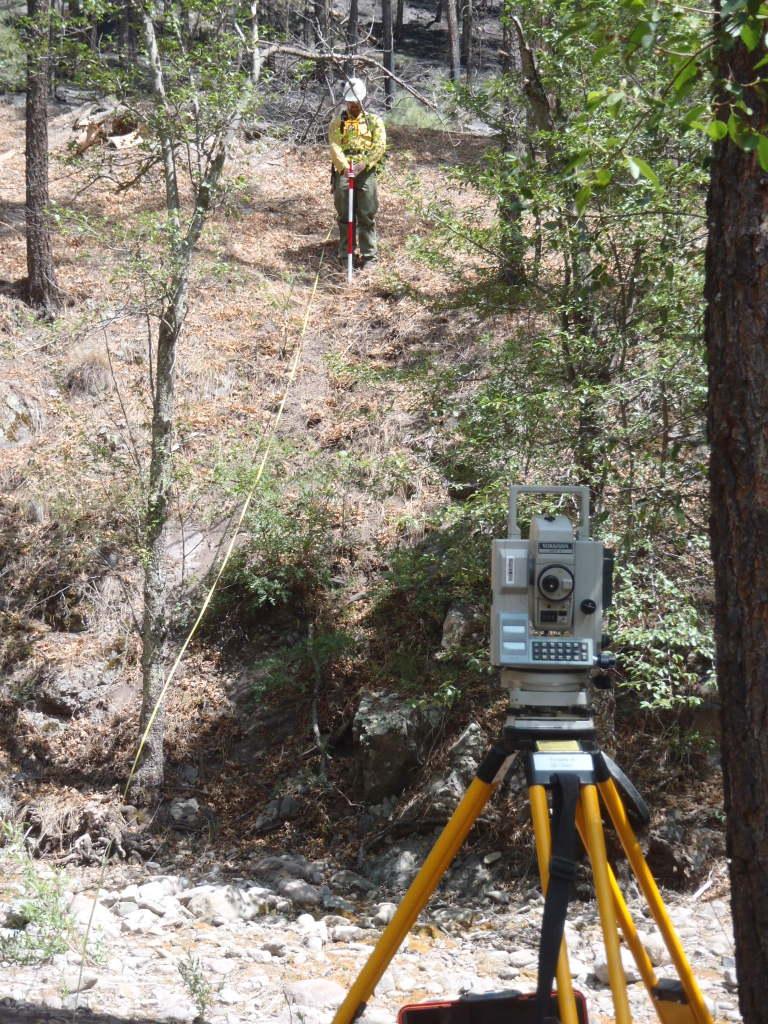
Burned Area Emergency Response (BAER) team hydrologist measures a cross section of Gallinas Creek in Gila National Forest near Kingston, NM. The Silver Post Fire response has the Burned Area Emergency Response (BAER) team beginning operations to seed acres of high burn severity and to mulch additional acres. Seeding reduces effects to downstream life, property, and infrastructure by reducing erosion and runoff. Areas of high burn severity are to be seeded with a quick germinating, non-persistent annual cereal barley that would provide rapid ground cover. A small percentage of native perennial species would also be included to give the burned area a jump start in natural recovery, and provide for long-term ground cover. Mulch is the most effective treatment for controlling erosion and runoff, as it provides immediate ground cover. Mulch also assists in stabilizing soil in and around these areas.